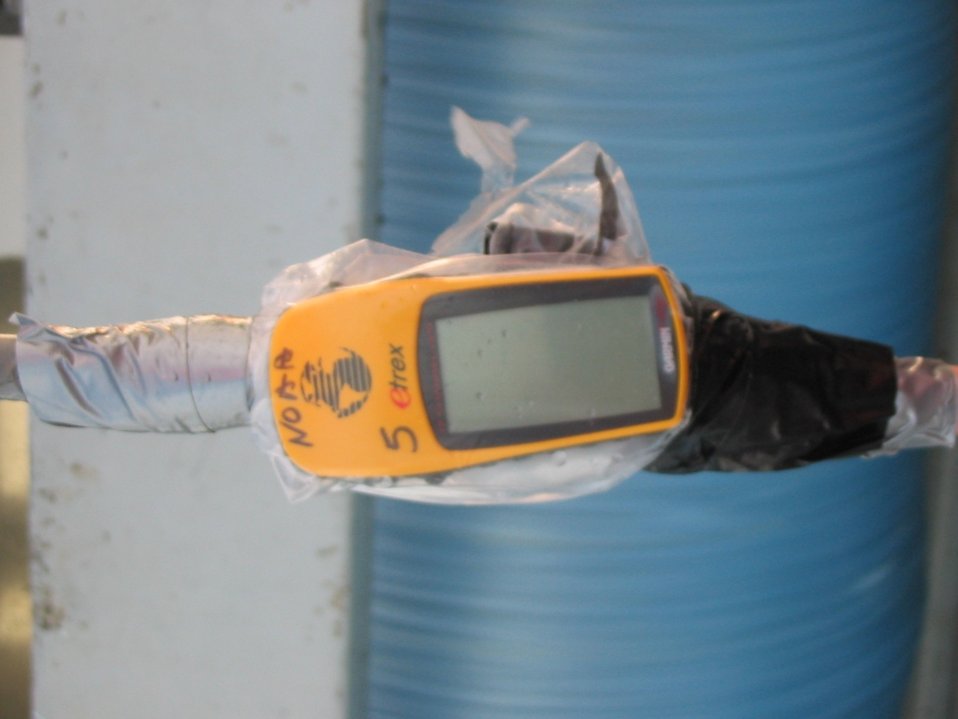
GPS navigator used for small boat navigation